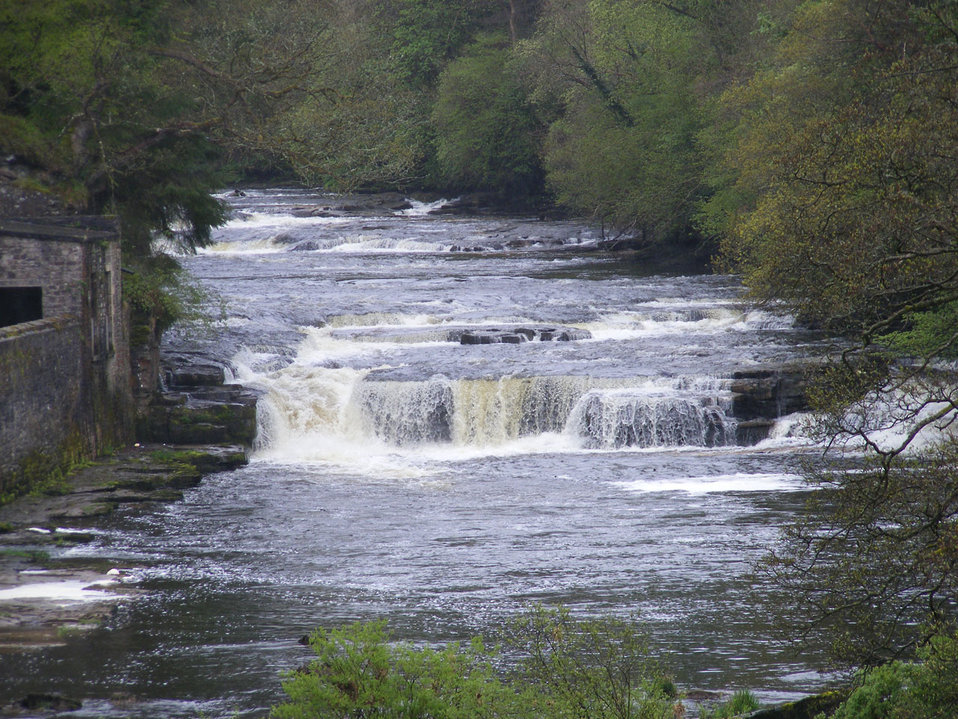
Falls of clyde

Waterfall on the clyde.